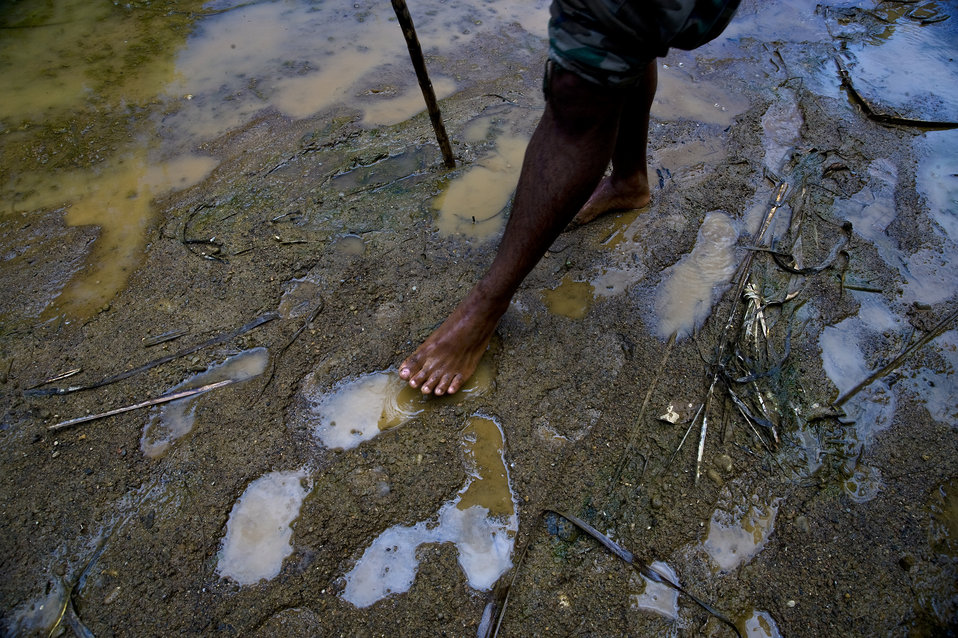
Operation Southern Partner

A member of the Royal St. Lucia Police Force's Special Service Unit walks barefoot through the mud and water due to lack of field training gear while practicing swift-water rescue procedures that were taught by U.S. Air Force pararescuemen June 5 during Operation Southern Partner at La Toc, St. Lucia. Operation Southern Partner is a long term commitment between U.S. and partner nations to share experiences, information, vital skills, tactics and techniques in preparation for future regional challenges that require cooperative solutions.